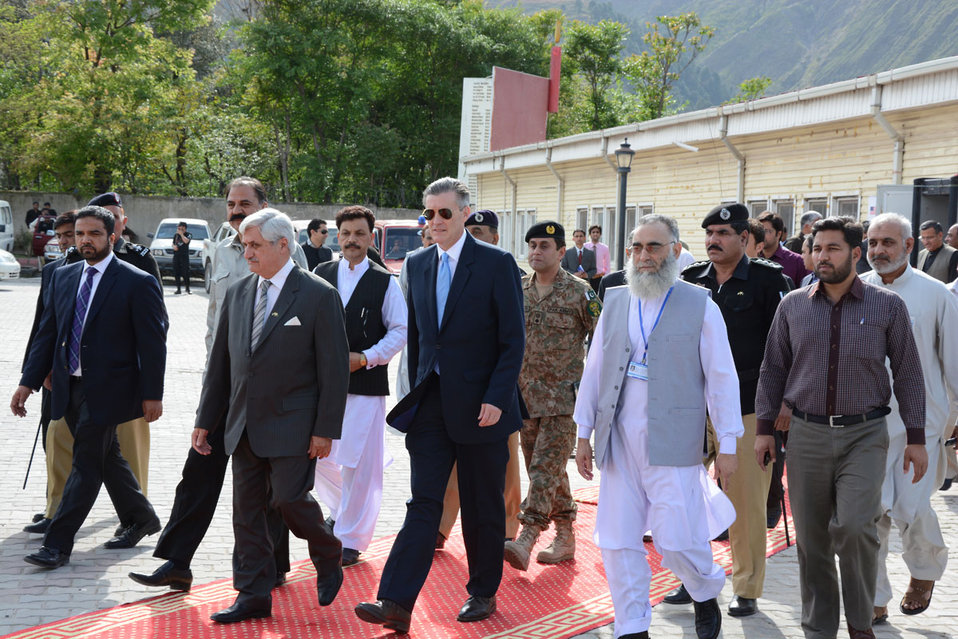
The United States Ambassador to Pakistan, Richard Olson broke ground for a U.S. funded construction of a new Faculty of Education building in Muzaffarabad, AJK. 36